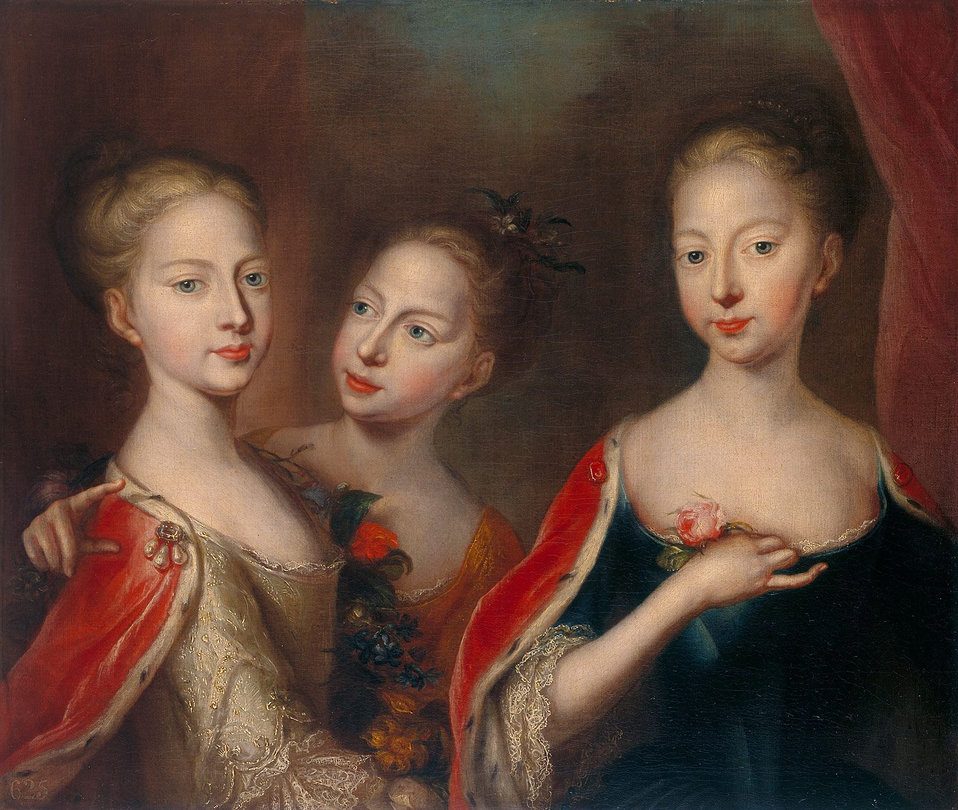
Princesses Anne, Amelia and Caroline - Maingaud 1721